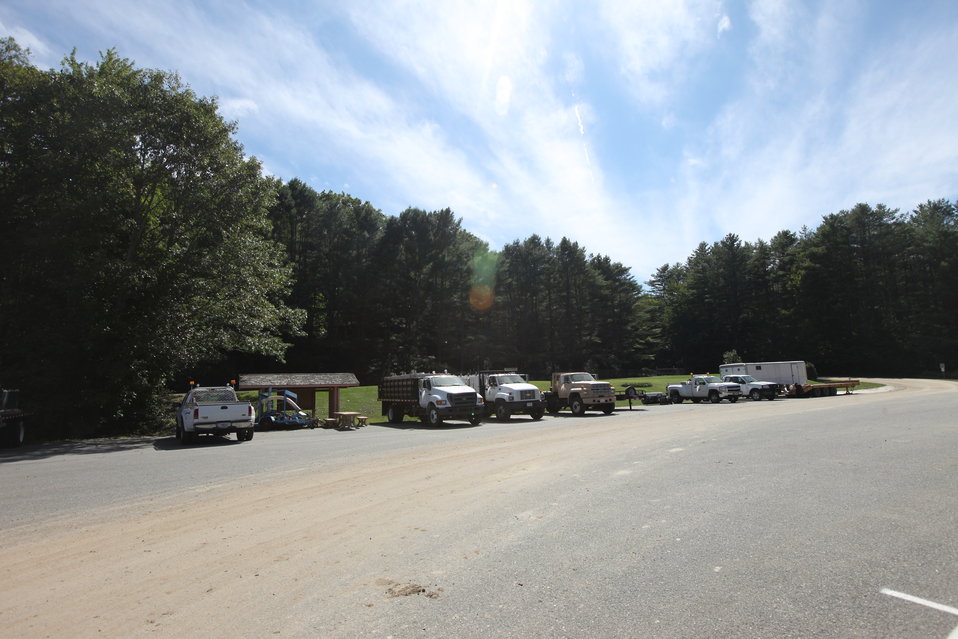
Storm damage relief at White River NFH

Heavy equipment operators came from other USFWS stations to help clean up.